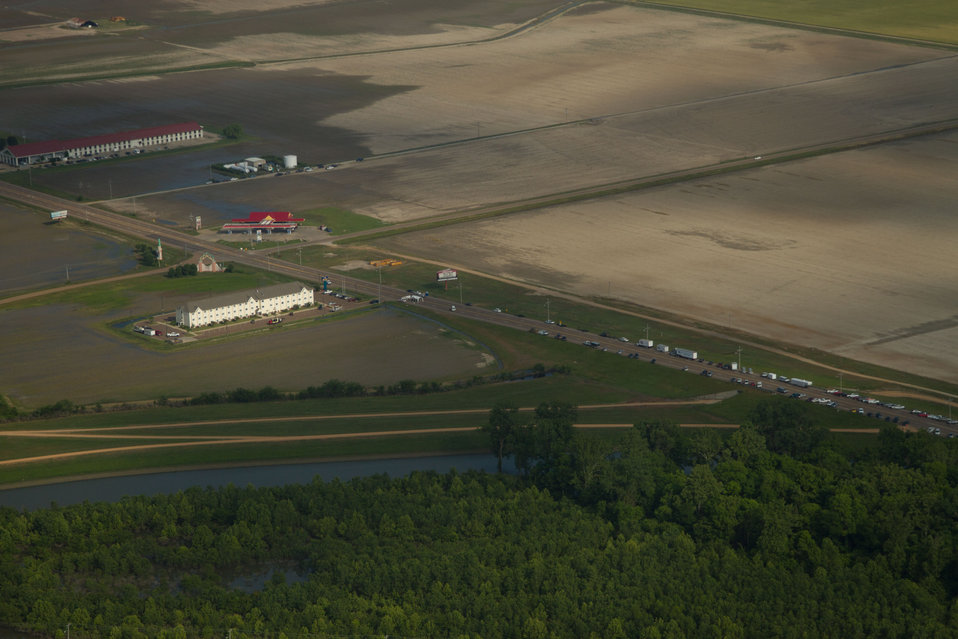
Aerial view of Mississippi River flood of farms, wilderness, and populated areas, on Thursday, May 19, 2011, from the MS side. Aerial platform was a UH-60 Blackhawk commanded by Col. Kennedy and his flight crew from the Army Aviation Support Facility #1 at Hawkins Field in Jackson, MS.